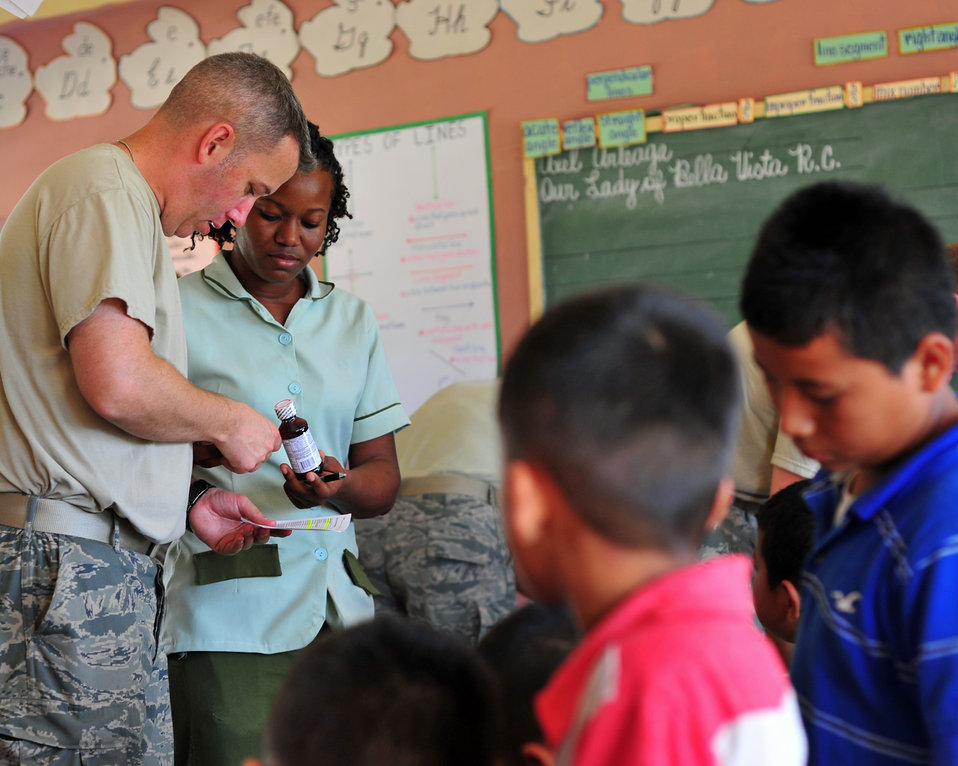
JTF-Bravo medics provide care in Belize

Master Sgt. Michael Atkins, the Joint Task Force-Bravo Medical Element radiology NCO in charge, discusses a prescription with a member of the Belizean Ministry of Health during the joint medical readiness training exercise in Bella Vista, Belize, Feb. 28, 2012. Members from the Belize Ministry of Health, Belizean military and JTF-Bravo, which is out of Soto Cano Air Base, Honduras, provided medical services to approximately 620 members of the local area.